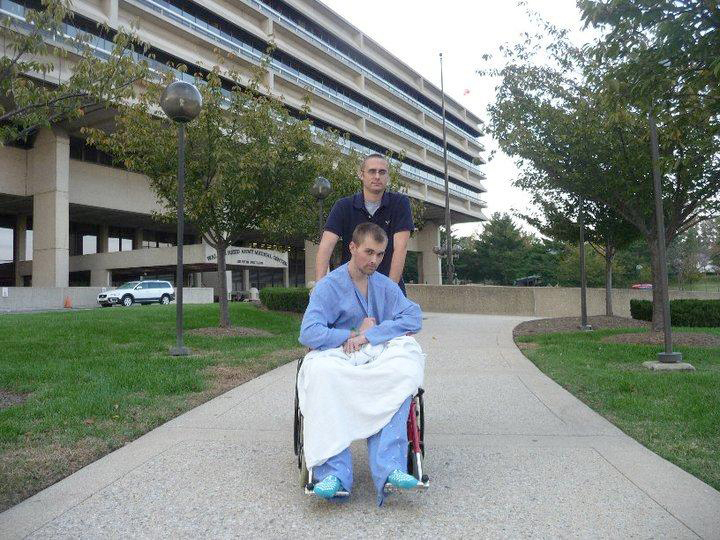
Airman close to death, wingman stays by his side

Senior Airman Erving Perkins wheels his wingman, Airman Colton Brown, out of Walter Reed Army Medical Center Oct. 8, 2010, for the first time while recovering from an illness. Shortly after arriving at Joint Base Balad, Iraq, fluid was found in Airman Brown's lungs, drainage tubes were placed and he was medically evacuated from the Air Force Theater Hospital to Germany. Airmen Perkins and Brown are both 4th Operation Support Squadron aircrew flight equipment technicians.